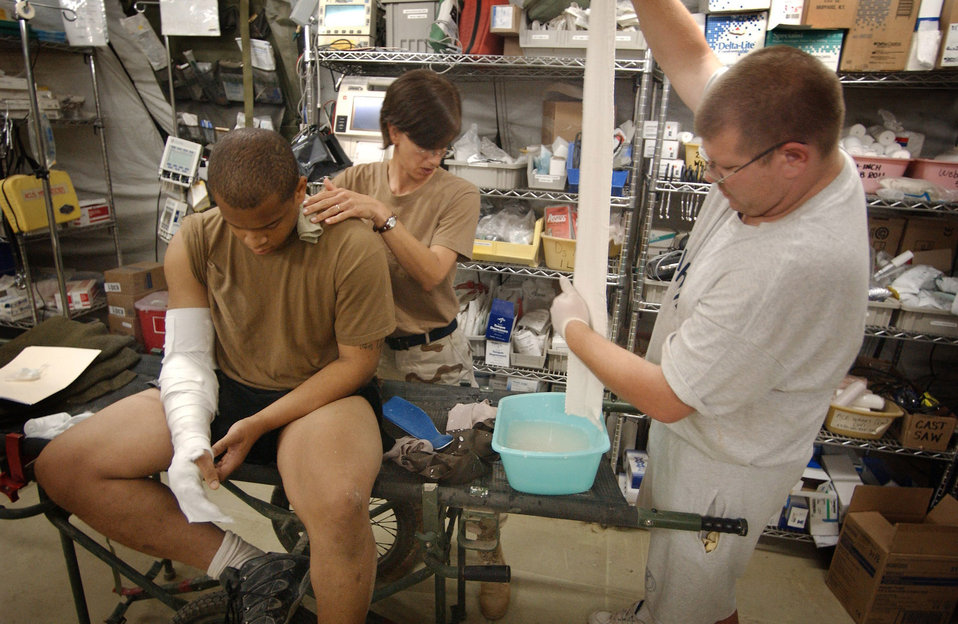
Fix 'em up, send 'em out

BAGHDAD, Iraq -- Capt. Gabrielle Childs (center) places a cold compress on Army Spc. Cedric Johnson's neck while Senior Airman Eric Dole prepares a plaster splint. Specialist Johnson had a severe radial forearm fracture. He was then airlifted to the Air Force theater hospital at Balad Air Base, Iraq. The Airmen are assigned to the 447th Expeditionary Medical Squadron. The squadron's Airmen provide orthopedic and general surgery care to about 30,000 Soldiers, Airmen and civilians working at Baghdad International Airport.